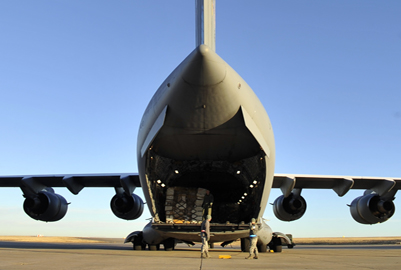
Afghan Aid

A C-17 Globemaster III sits on the flightline recently at Buckley Air Force Base, Colo., while being loaded with pallets containing supplies bound for Afghanistan. Planners hope the supplies will allow for the refurbishing and/or rebuilding of 25 hospitals and clinics in the region.